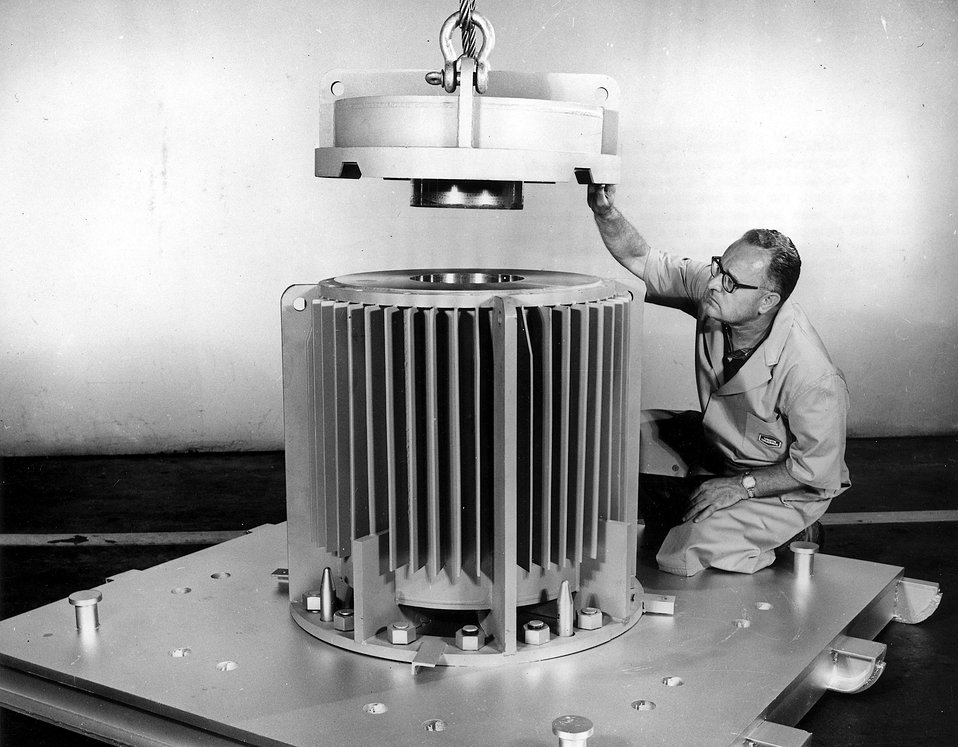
Shown in this prototype radioisotope shipping cask designed and build at the AEC's Paducah Gaseous Diffusion Plant for the Oak Ridge National Laboratory. Circa 1967.